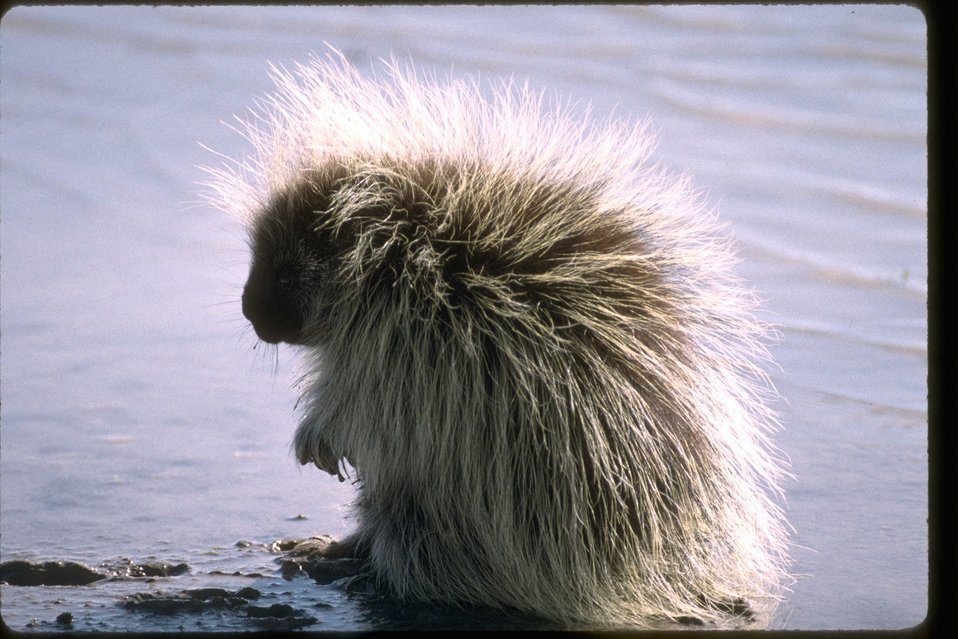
Porcupine photographed at the Palomino Buttes area west of Burns, Oregon.